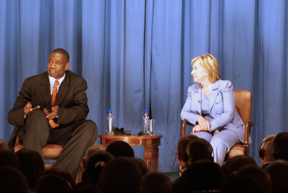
Secretary Clinton Conducts Town Hall Meeting With Congolese Students

U.S. Secretary of State Hillary Rodham Clinton and pro basketball player Dikembe Mutombo conduct a town hall meeting with Search for Common Ground and Congolese University Students August 10, 2009 in Kinshasa, Democratic Republic of the Congo.